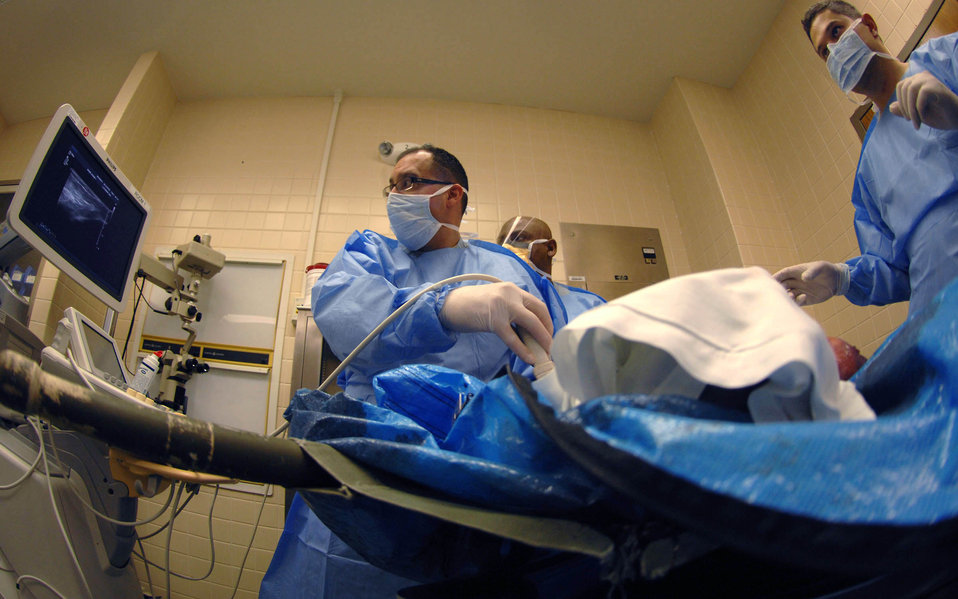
Muscularskeletal Ultrasound training

Lt. Col. (Dr.) Elliot Pinero (center) attempts to locate various muscularskeletal areas using an ultrasound along with fellow trainee Army Capt. (Dr.) Michael Stoudmire (rear) as instructor Maj. (Dr.) David Wang observes April 14, 2011, during a muscularskeletal radiology class held in the 59th Medical Wing's Clinical Research Division in Wilford Hall Medical Center on Lackland Air Force Base, Texas. Dr. Pinero is a muscularskeletal radiologist stationed at the Air Force Academy in Colorado Springs, Colo. Dr. Stoudmire is the chief radiologist at Bayne Jones Army Community Hospital in Fork Polk, La. Dr. Wang is a muscularskeletal radiologist stationed at Wilford Hall.